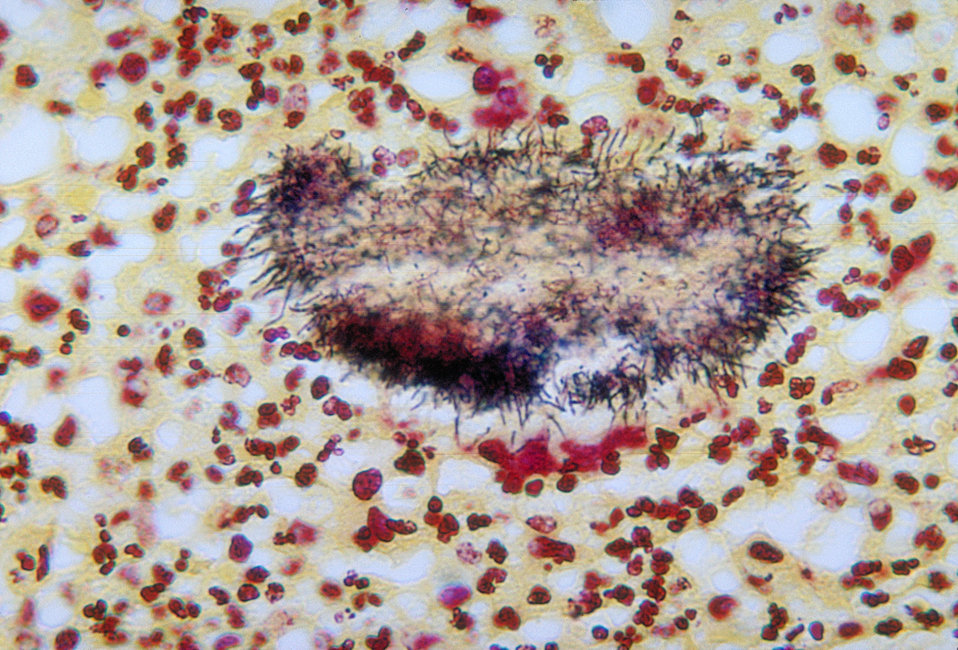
This micrograph depicts the histopathologic changes associated with actinomycetoma of the foot using a Brown and Brenn stain.